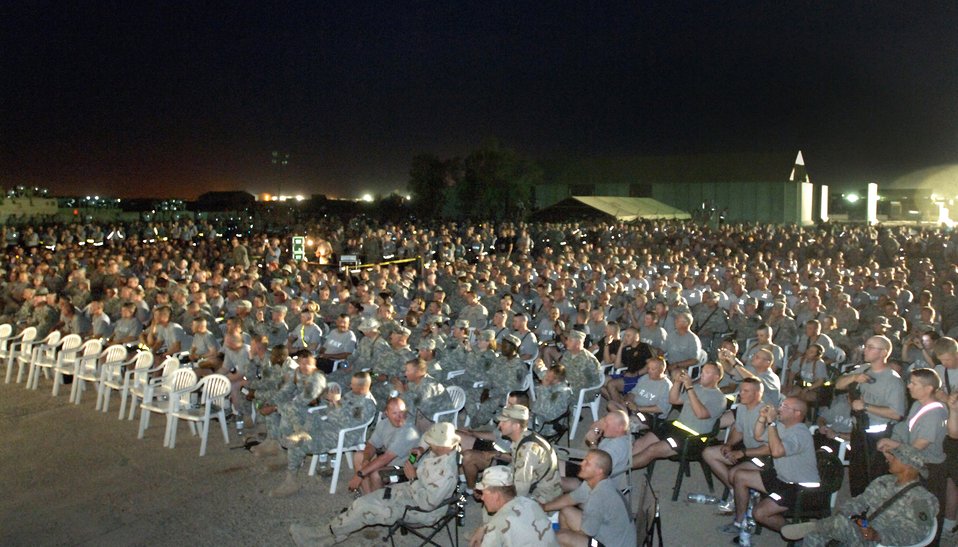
Charlie Daniels entertains the troops

Servicemembers at Ali Base, Iraq, await the start of the Charlie Daniels Band concert on Saturday, April 15, 2006. The performance was presented as part of Stars for Stripes, a nonprofit organization which works with Armed Forces Entertainment and U.S. Army Europe Morale, Welfare and Recreation to bring celebrity entertainment to remote sites. The Charlie Daniels Band has been entertaining U.S. military troops around the world for more than 35 years.